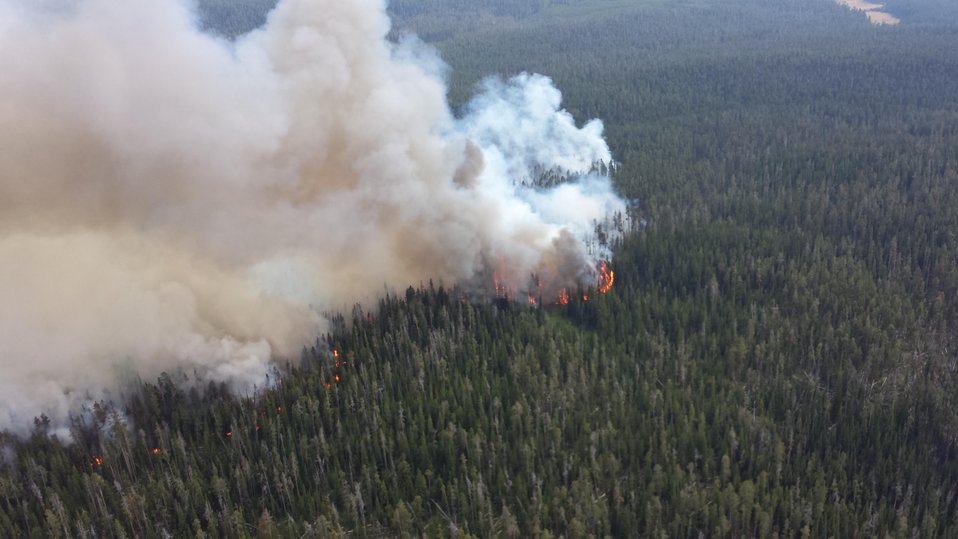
The Druid Complex Fire in Yellowstone National Park in Wyoming began on Aug. 13, 2013 by lighting has consumed approximately 11,658 acres.